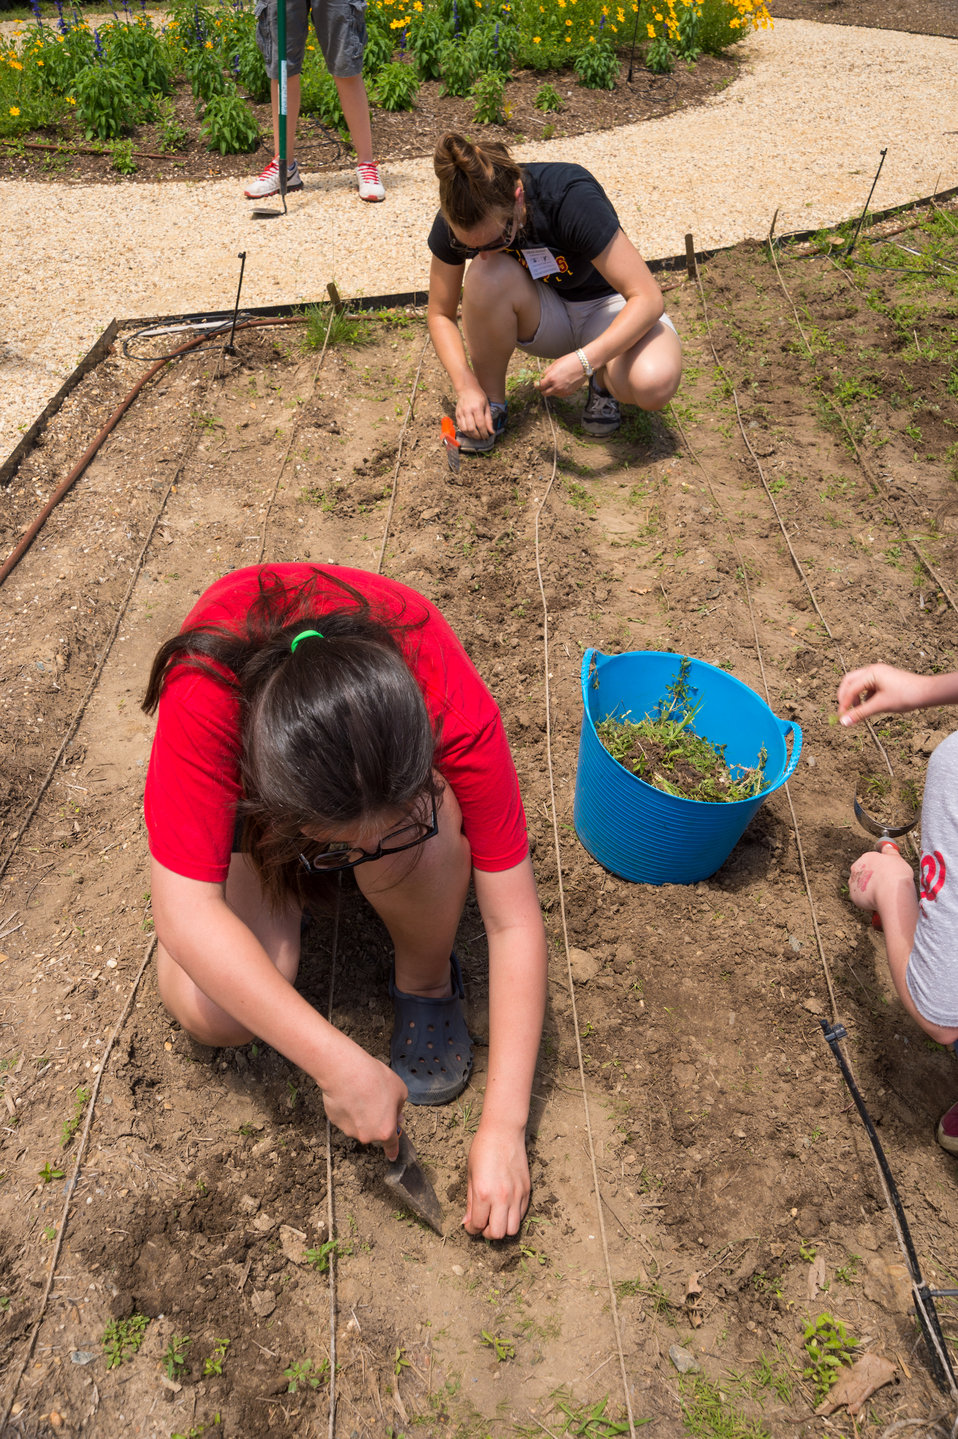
Cecilia D’Antonio a science teacher and Emma Hazard a student from Alice Deal Middle School volunteered in the People’s Garden at the U.S. Department of Agriculture Wed. Jun. 4, 2014. Corina Capuano, Chad Gregory and Ellie Hart students from Alice Deal Middle School volunteered in the People’s Garden at the U.S. Department of Agriculture Wed. Jun. 4, 2014. The students have been studying hunger, food security, how to prevent hunger and organizations involved in solving hunger situations nationally and worldwide. The USDA’s Faith Based and Neighborhood Partnerships office sponsored the event.